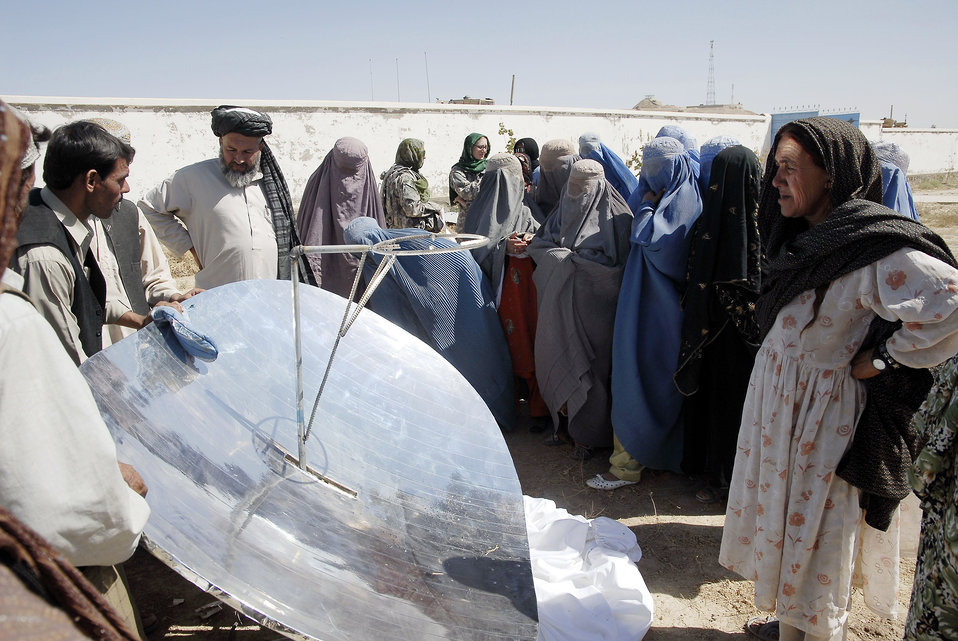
Servicemembers help Afghans

Women received solar cookers Sept. 1, 2009 in the Zabul province. Provincial Reconstruction Team Zabul members introduced the solar cooking concept to the Zabul province community, offering new ideas and technology for food preparation.